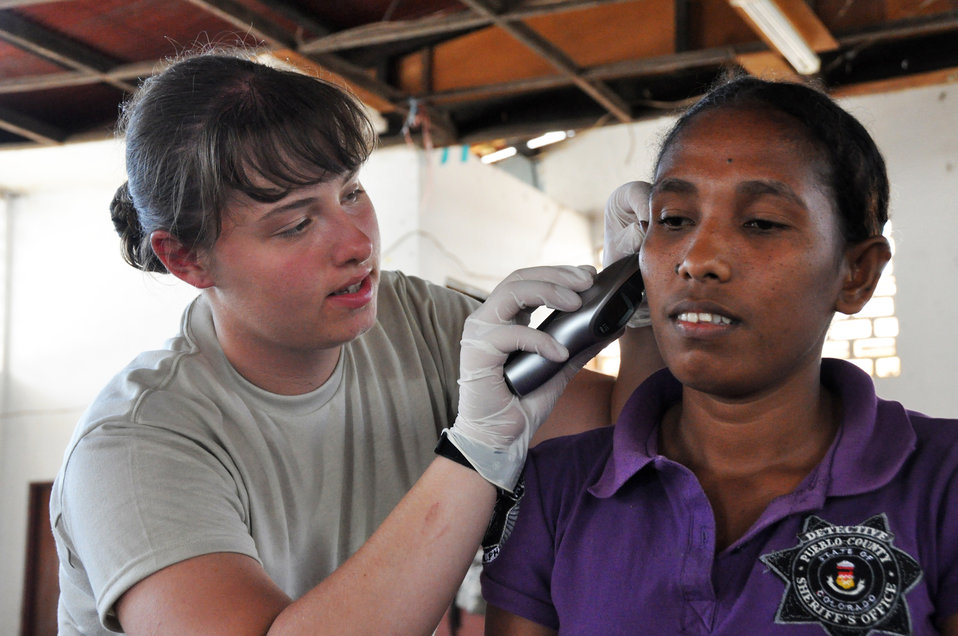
Airmen help hundreds in Timor Leste

Senior Airman Ashley Cope conducts an ear exam on an East Timorese woman during inprocessing procedures at a clinic July 16 in Dili, Timor Leste. Airman Cope is assigned as a labor and delivery technician to the 3rd Medical Group at Elmendorf Air Force Base, Alaska. East Timorese and U.S. officials set up the clinic as part of Operation Pacific Angel 2009, a Pacific Air Forces humanitarian assistance operation led by 13th Air Force at Hickam AFB, Hawaii.